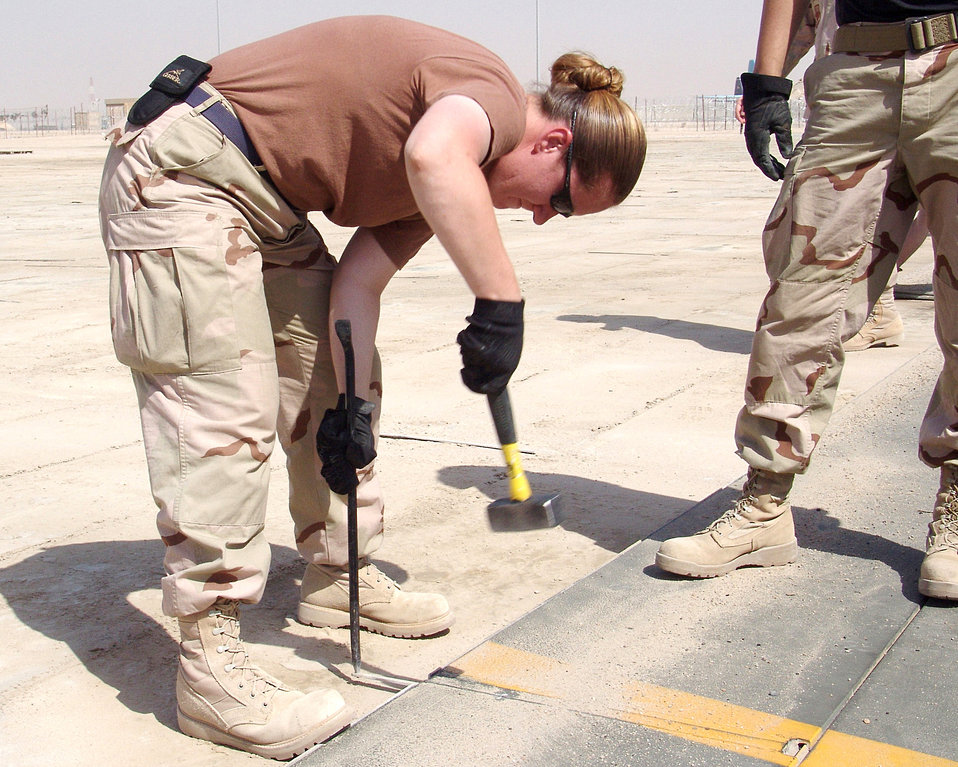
Bundle up

SOUTHWEST ASIA -- Staff Sgt Jamie Correa loosens a metal plank that had served as the temporary flightline surface in preparation for paving the ramp area at a forward-deployed location. Sergeant Correa is assigned to the 386th Expeditionary Civil Engineer Squadron and is deployed from Misawa Air Base, Japan.